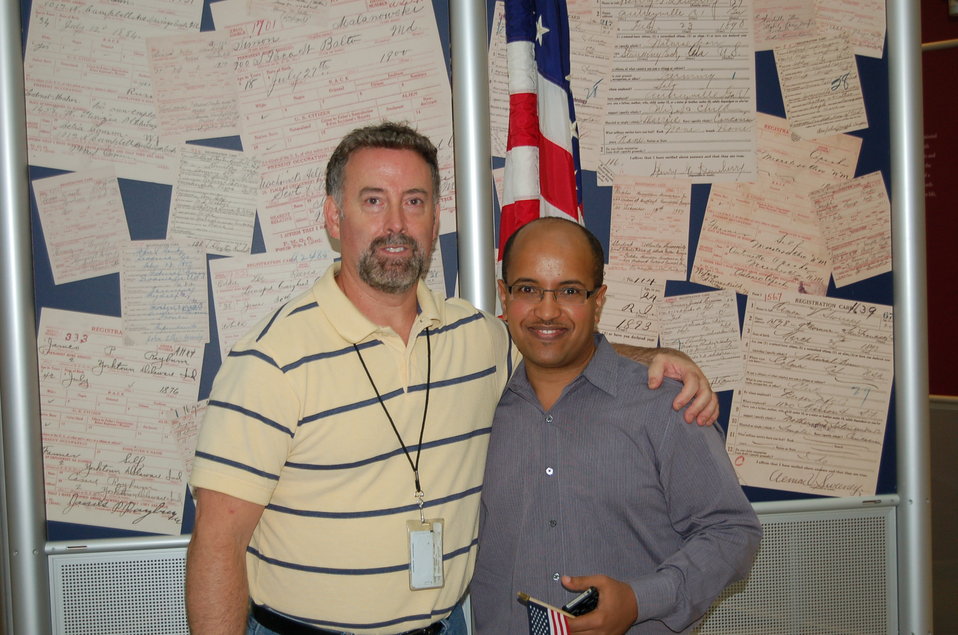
New Citizens